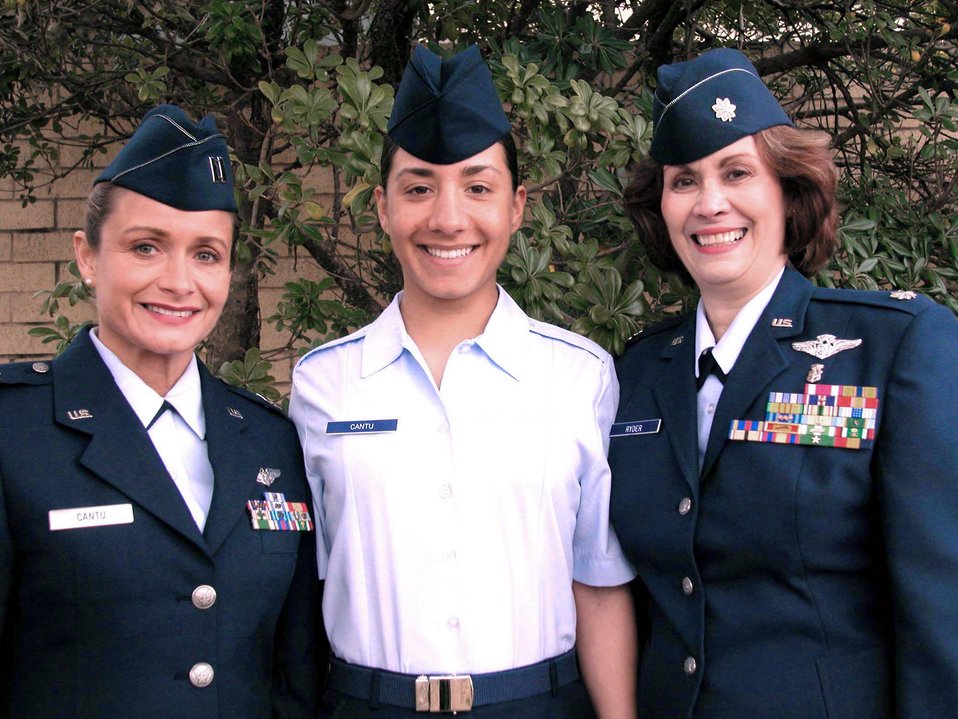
Airman carries on female family tradition

LACKLAND AIR FORCE BASE, Texas -- (From left) Capt. Julie John-Cantu with her daughter, Airman 1st Class Brianna Cantu, and aunt, retired Lt. Col. Diana Curi-Ryder, have almost 60 years of combined military service in the Army and Air Force Reserve. Captain John-Cantu is assigned to the 433rd Medical Squadron here. Colonel Curi-Ryder served in the 433rd Aeromedical Evacuation Squadron here, and Airman Cantu will follow in her footsteps after she completes her technical training.